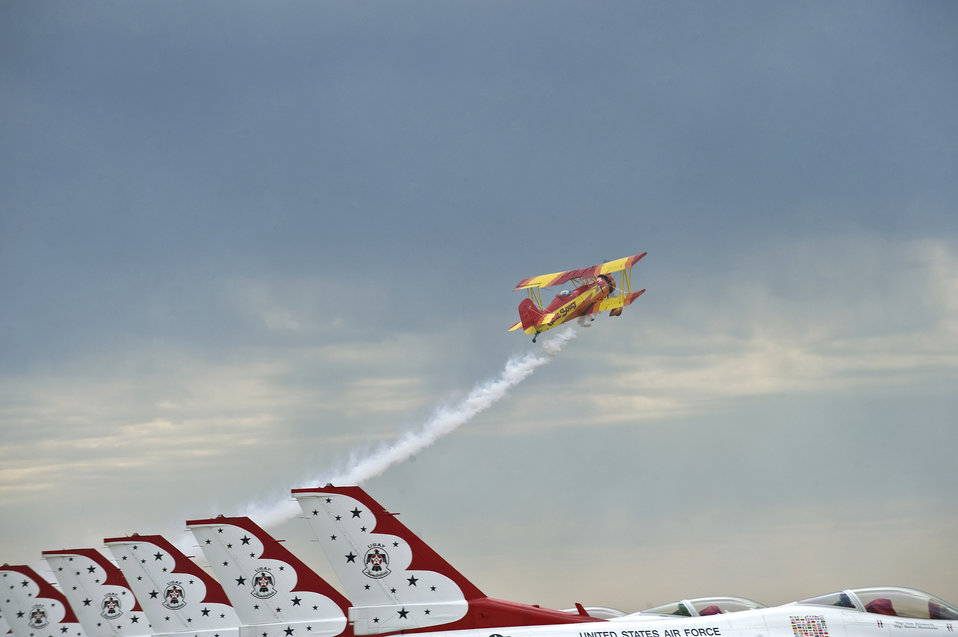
Air Force Week Sacramento

Aerobatic pilot Gene Soucy performs maneuvers over the Air Force Thunderbird F-16 Fighting Falcons Sept. 12, 2009, during the California Capital Air Show, the culminating event of Air Force Week Sacramento. Air Force Week-Sacramento is an event featuring various activities and exhibitions to educate the community about the Air Force's capabilities and missions.